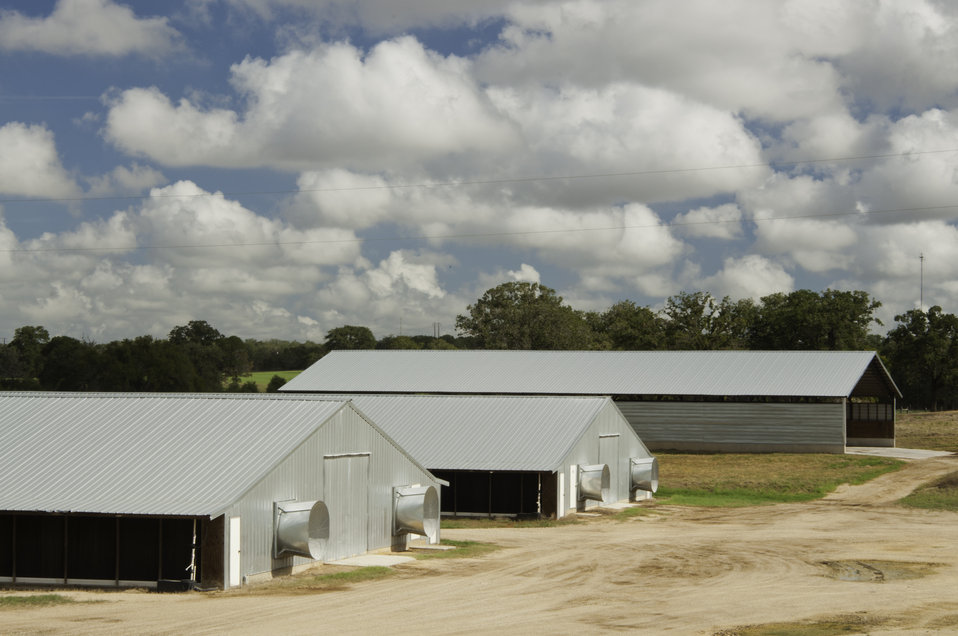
Poultry houses sit in the sun on Bobby Morgan Poultry Farm Luling, TX on Aug. 23, 2013.